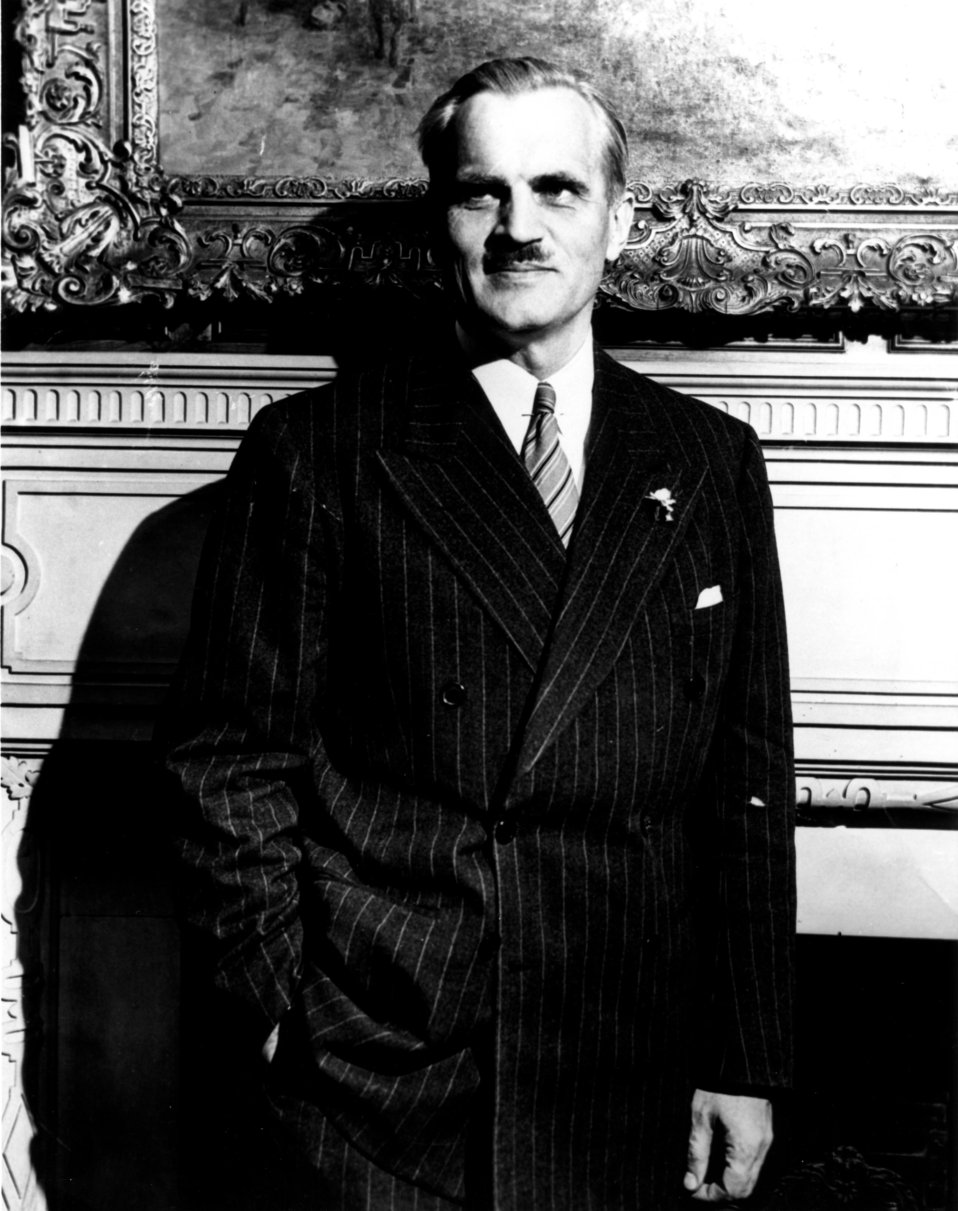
Notable persons at Oak Ridge